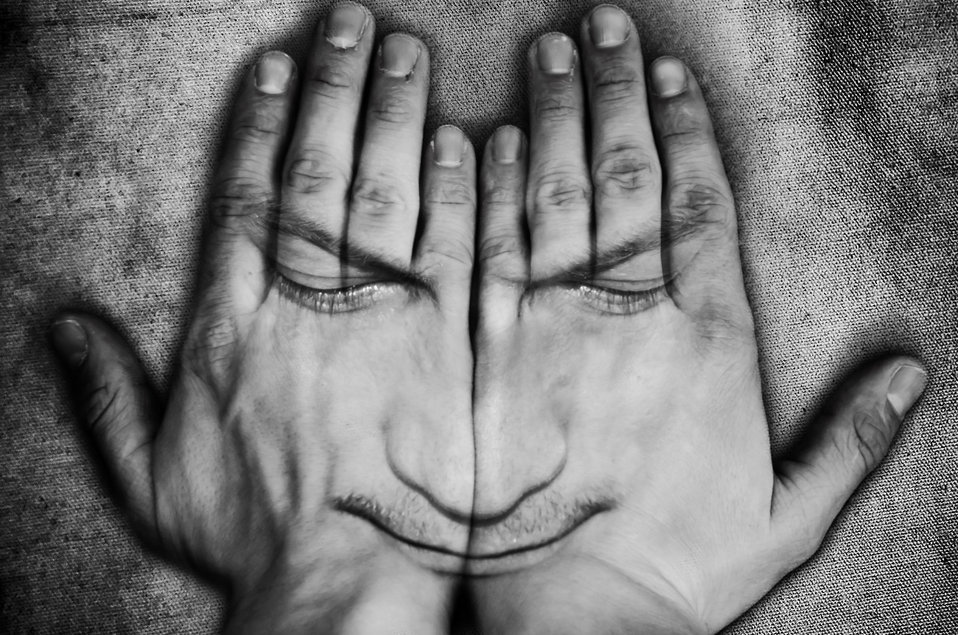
Face in hands.